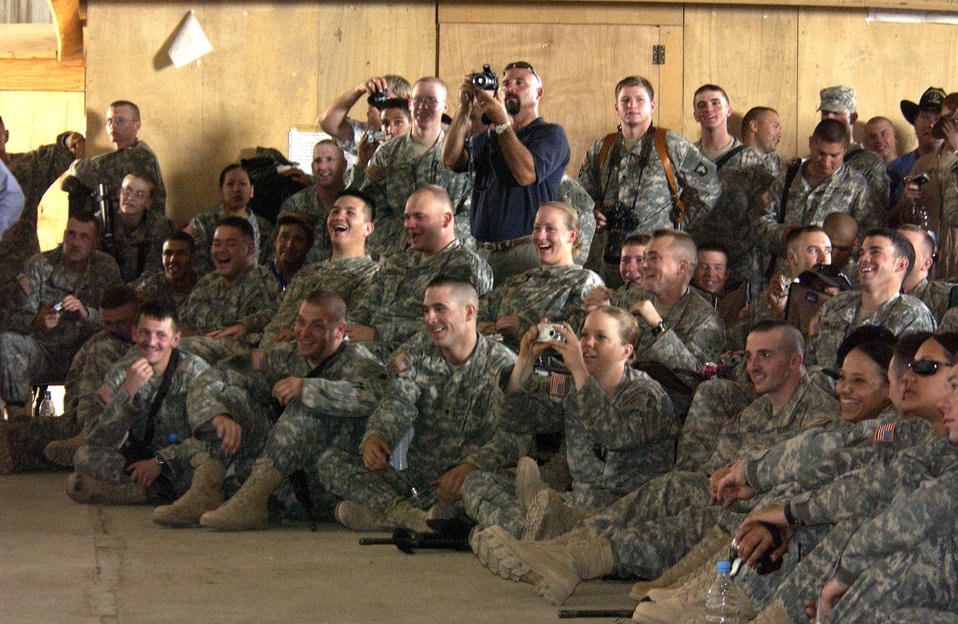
Toby Keith performs for the troops

Servicemembers enjoy country music performer Toby Keith during his visit to Forward Operating Base Warhorse, Iraq, on Saturday, May 27, 2006. The base in the Diyala Province was the first stop on Mr. Keith's USO tour.